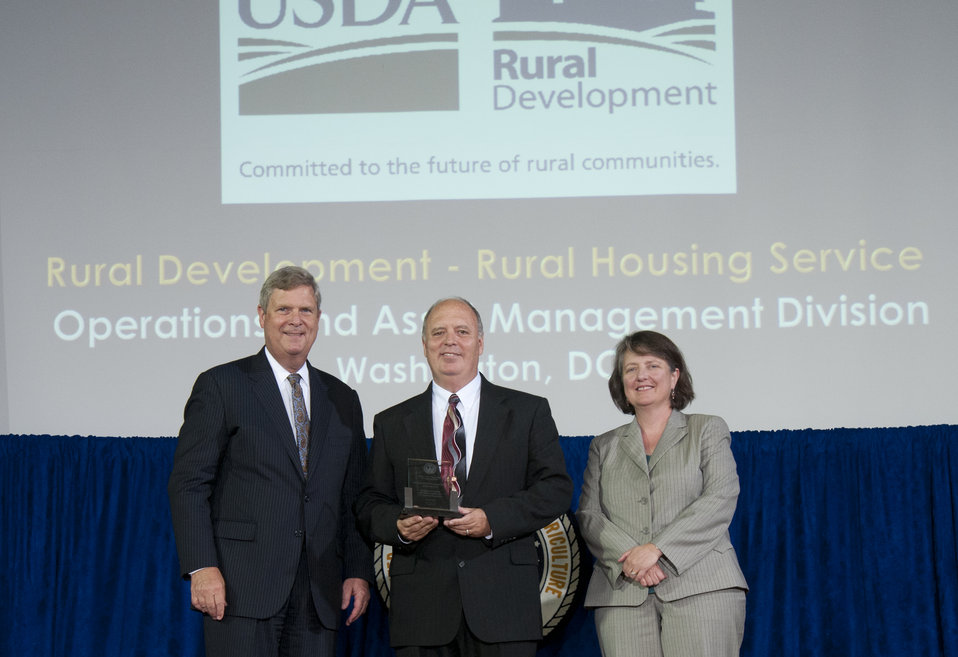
Agriculture Secretary Tom Vilsack and Agriculture Deputy Secretary Kathleen Merrigan present the Secretary’s Honor Award to Operations and Asset Management Division Rural Development (RD) Rural Housing Service group leader Edward Duval at the U.S. Department of Agriculture (USDA) 64th Annual Honor Awards Ceremony in Washington, D.C. on Wednesday, Sept. 12, 2012. The Operations and Asset Management Division received their award for outstanding achievements in promoting reduced costs and transparency in Multi-Family Housing’s funding application process by automating and simplifying application forms and promoting the use of electronic application submissions.